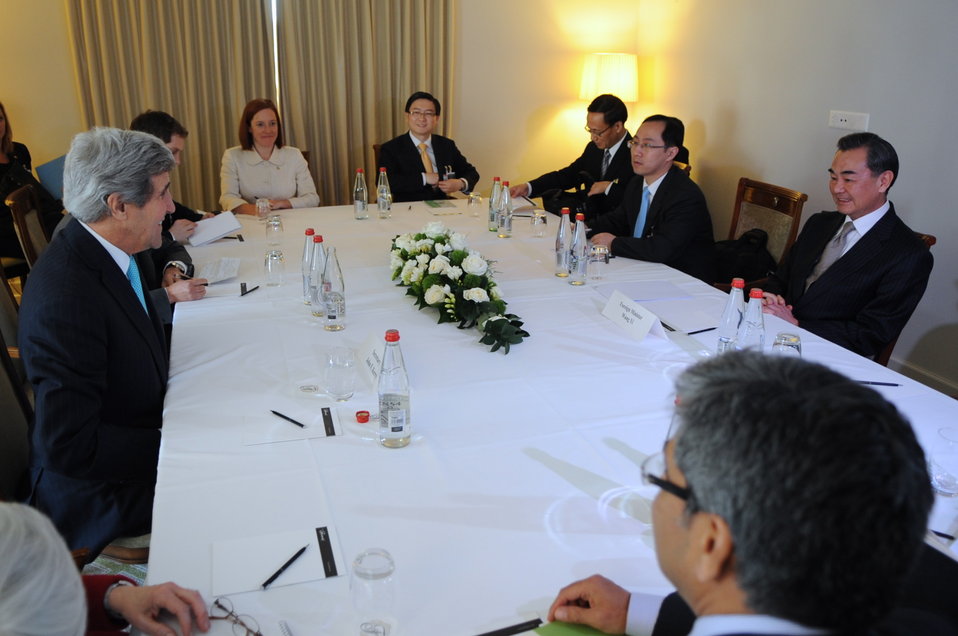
Secretary Kerry Meets With Chinese Foreign Minister Wang in Montreux

U.S. Secretary of State John Kerry holds a one-on-one meeting with Chinese Foreign Minister Wang Yi on the sidelines of the Geneva II conference in Montreux, Switzerland, on January 22, 2014.